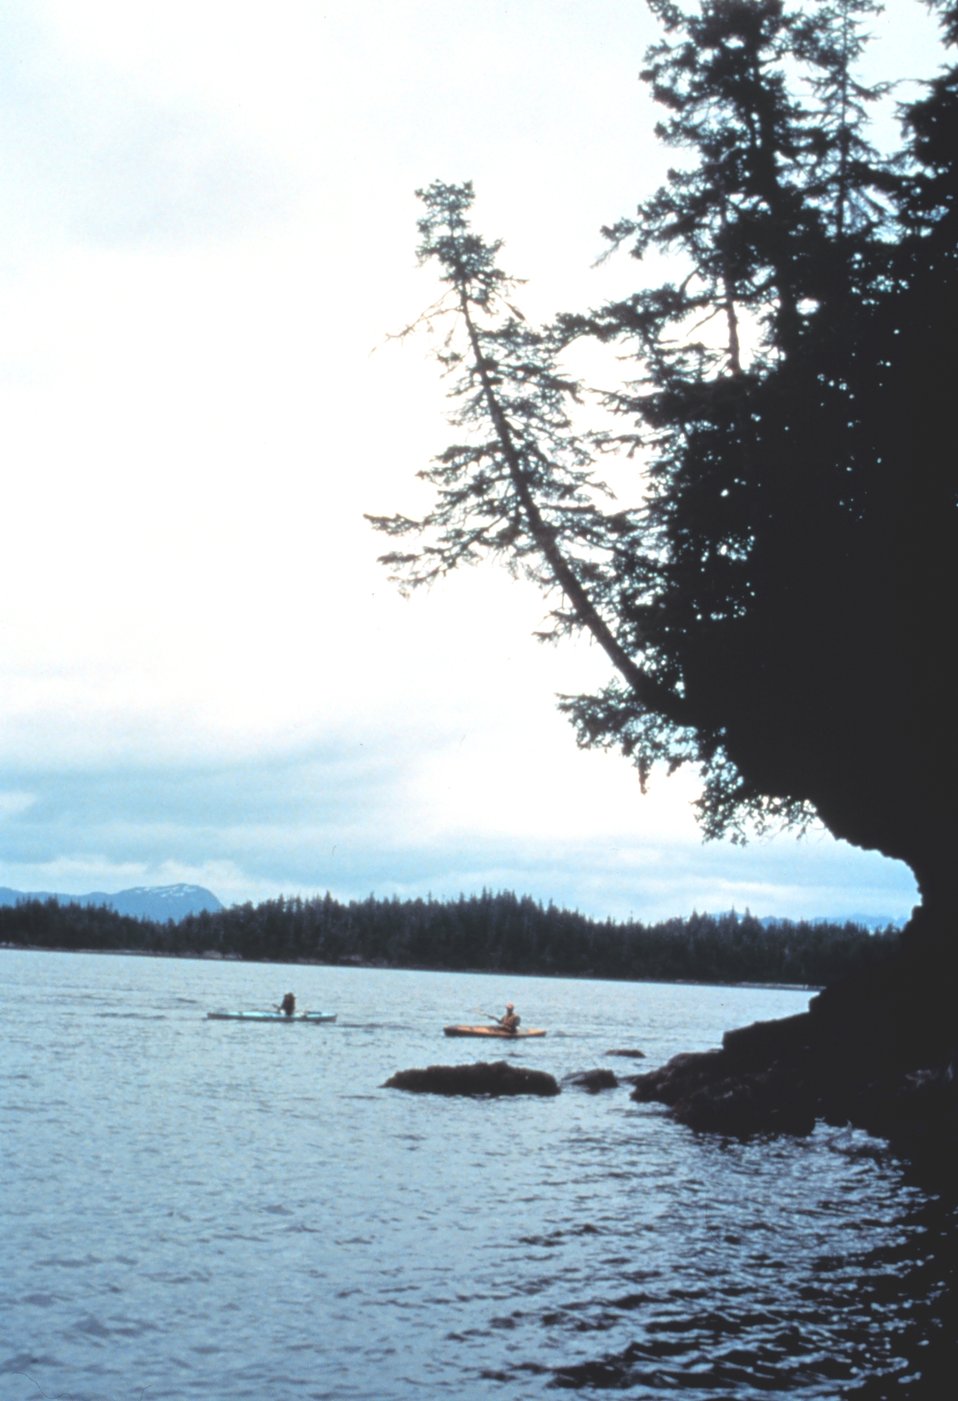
Kayakers passing a rocky point